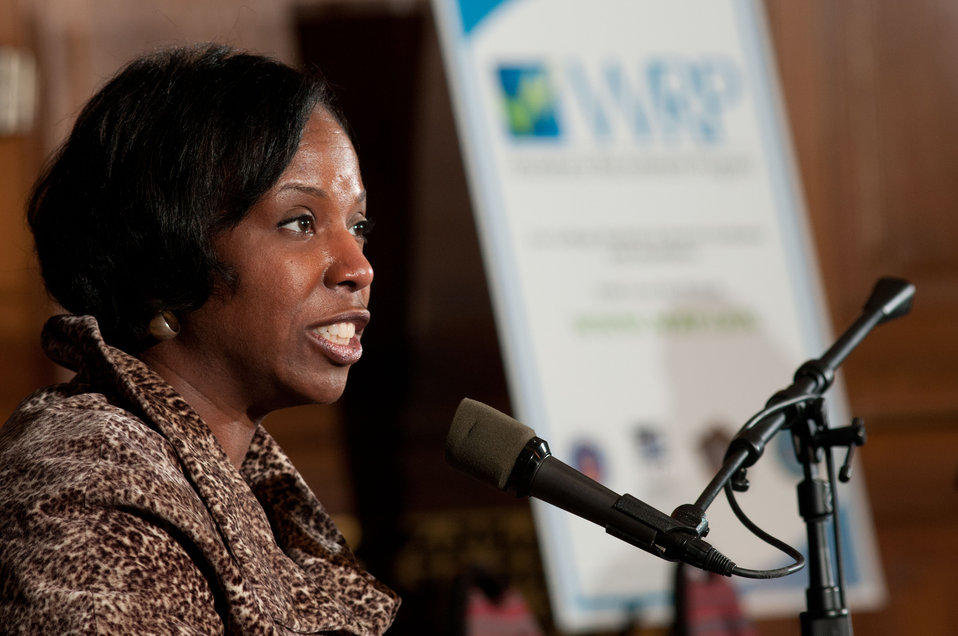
United States Department of Agriculture Special Assistant to the Secretary on Disability Employment Carmen Jones addresses the Work Force Recruitment Program’s (WRP) 'Your Key To Hiring Student Interns and Employees with Disabilities” event hosted by the United States Department of Agriculture (USDA) in the Jefferson Auditorium, Washington, D.C. on Tuesday, February 7, 2012.